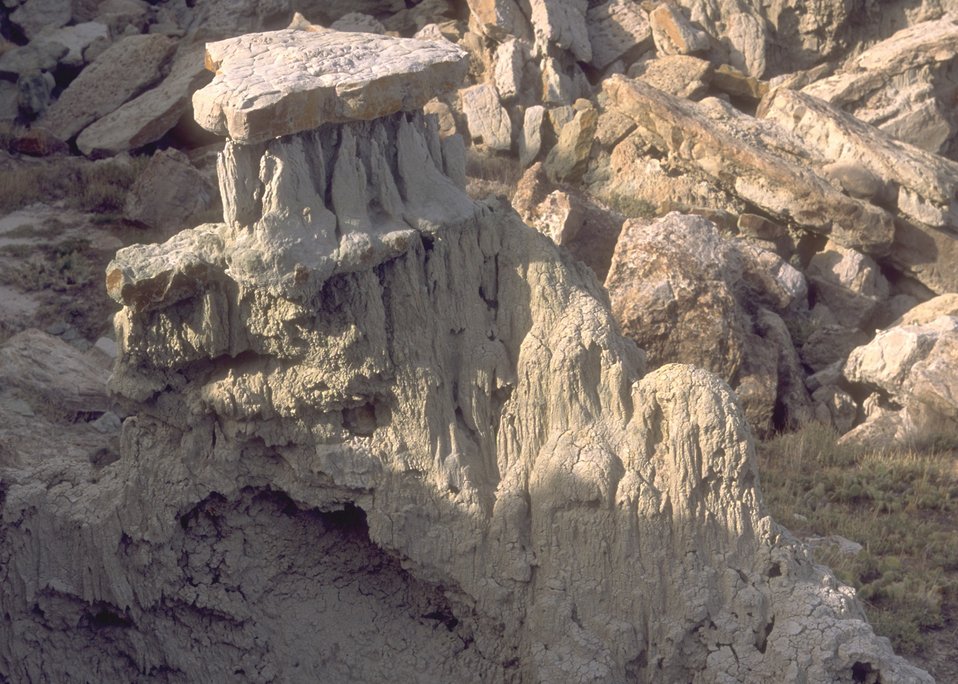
Gooseberry Interpretive Area, Worland Field Office.